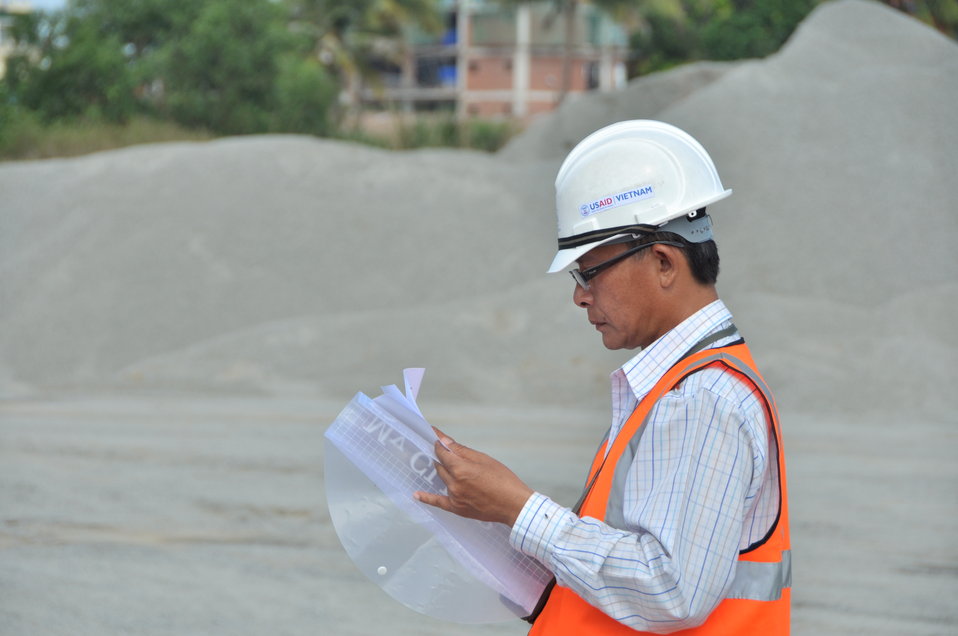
Site construction at the Environmental Remediation of Dioxin Contamination at Danang Airport

Progress at the Danang Airport remediation site
April 23, 2013